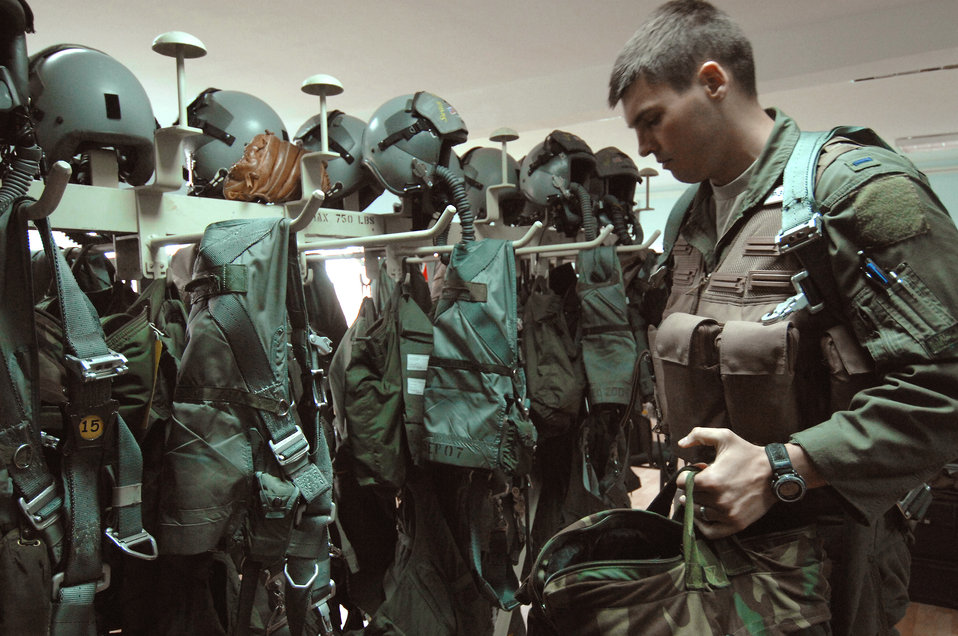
A-10 pilots take to Bulgarian skies during joint exercise

1st Lt. Patrick Parrish, 81st Fighter Squadron pilot, suits up and prepares to fly on a training mission over Novo Selo Training Range, Bulgaria. Lieutenant Parrish deployed to Bezmer Air Base, Bulgaria, from Spangdahlem Air Base, Germany, to support a joint training exercise.